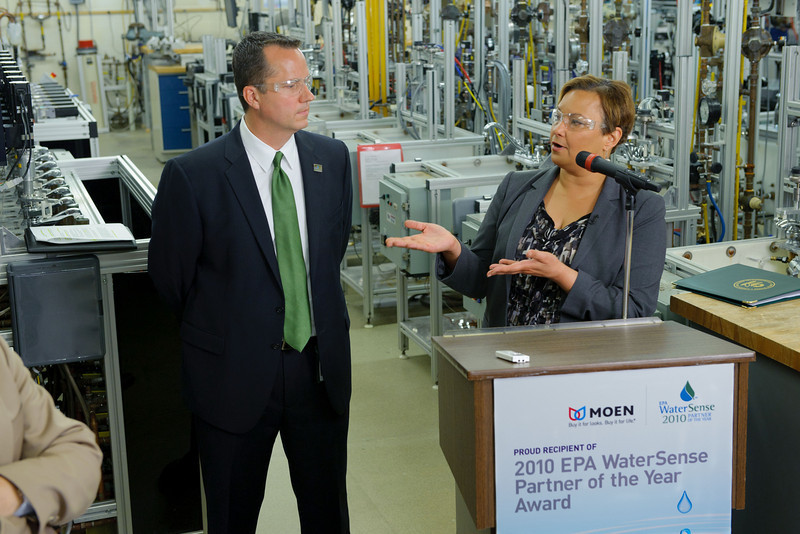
2011-06-17ClevelandBanner003-L

USEPA Administrator Lisa P. Jackson and President, US Business, Moen, Mike Bauer at Water Sense press conference.